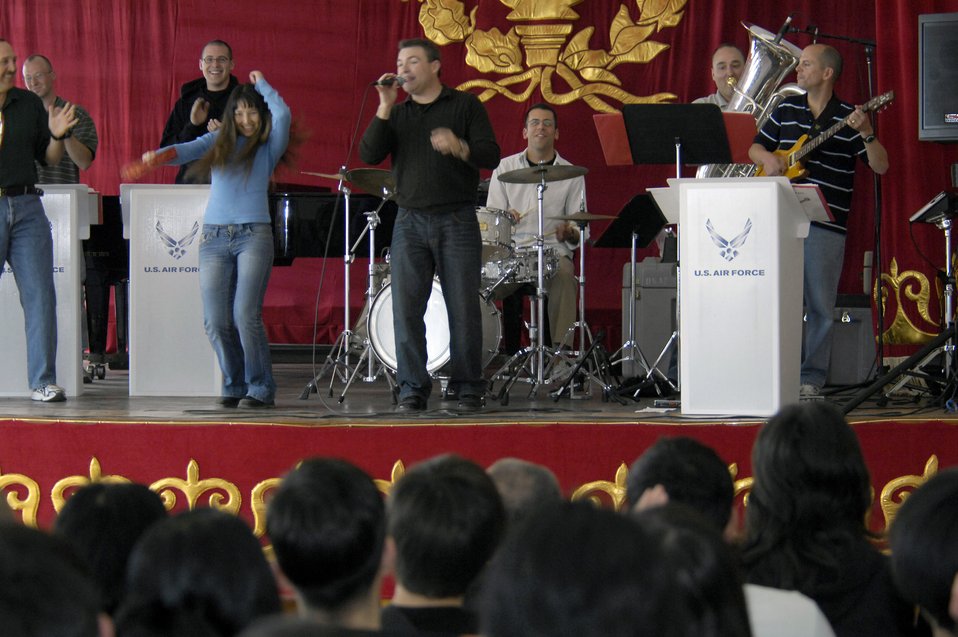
Band members connect with Kyrgyzstan music students

Gulia Aidaralieva plays the tambourine with the U.S. Air Forces Central Band Hot Brass March 26 at the Bishkek College of Music in Kyrgyzstan. The Air Force pop band performed at the Bishkek College of Music as well other locations off-base during their six-day trip to Kyrgyzstan. Miss Aidaralieva is a student of the Bishkek College of Music in Kyrgyzstan.